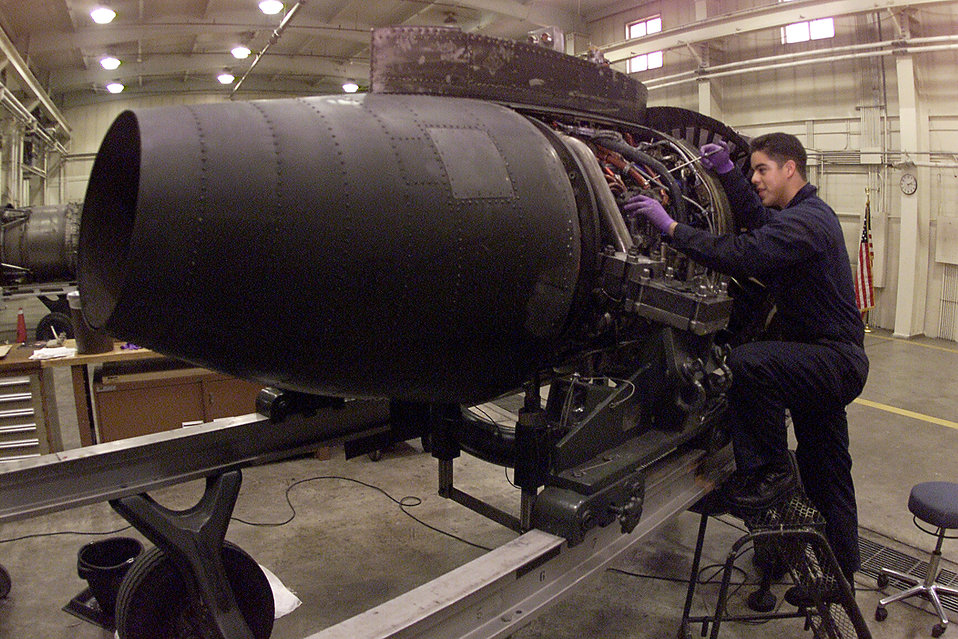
Seven level

OSAN AIR BASE, South Korea -- Staff Sgt. Henry Gonzalez conducts a seven-level inspection on a jet engine for serviceability here March 31. Sergeant Gonzalez is an aerospace propulsion craftsman with the 51st Maintenance Squadron.